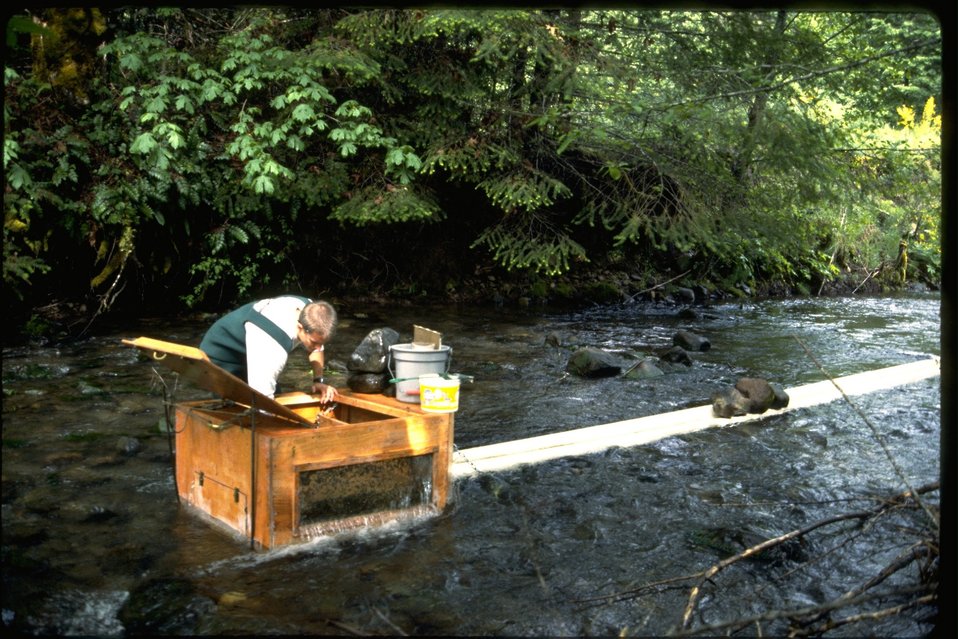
Catching smolts in an anadromous fish study.